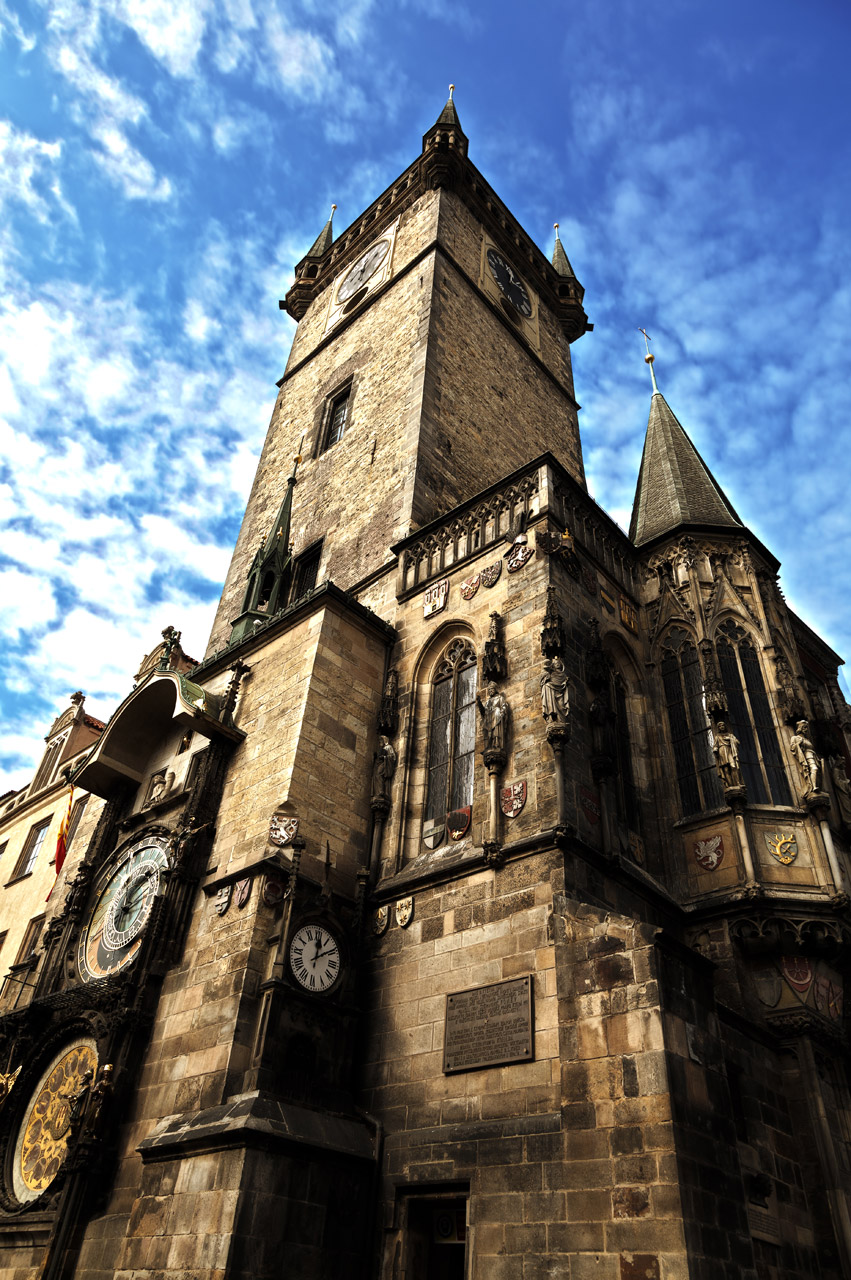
Old town city hall in prague in hdr.